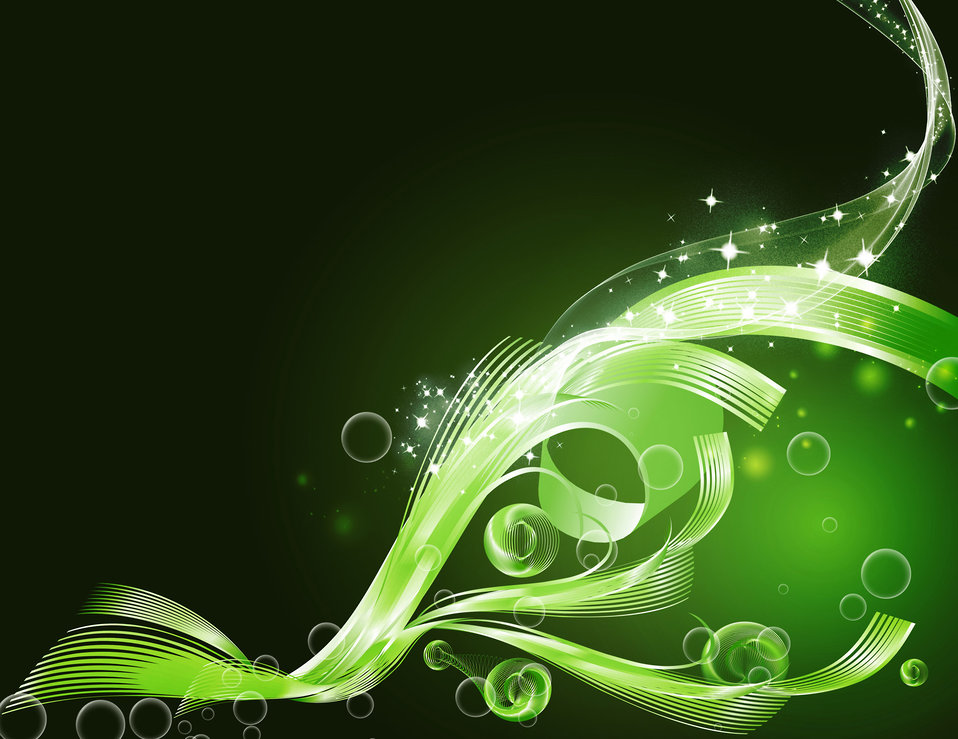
Green abstract background with swirls and sparkles.